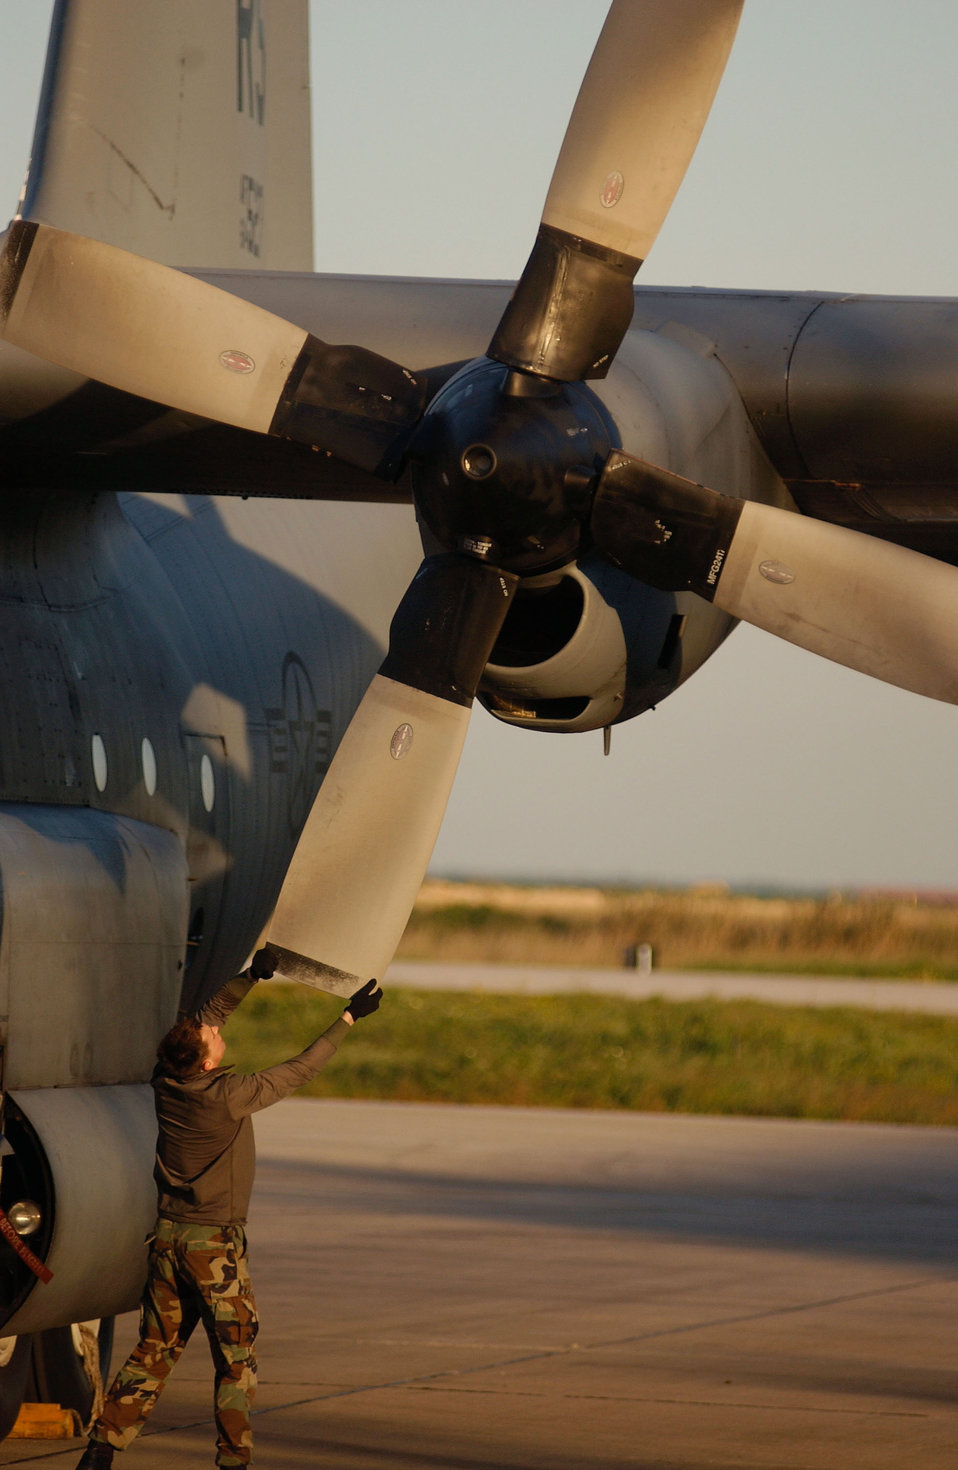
Contact!

LISBON, Portugal -- Senior Airman Ryan Conti, a crew chief with the 37th Airlift Squadron, rotates the blades on a C-130 Hercules during post flight operations here. The aircraft will be the first to be refurbished by OGMA (Oficinas Gerais de Material Aeron√°utico) Industries and returned to Ramstein Air Base, Germany. Seven more C-130s are scheduled for future refurbishments.